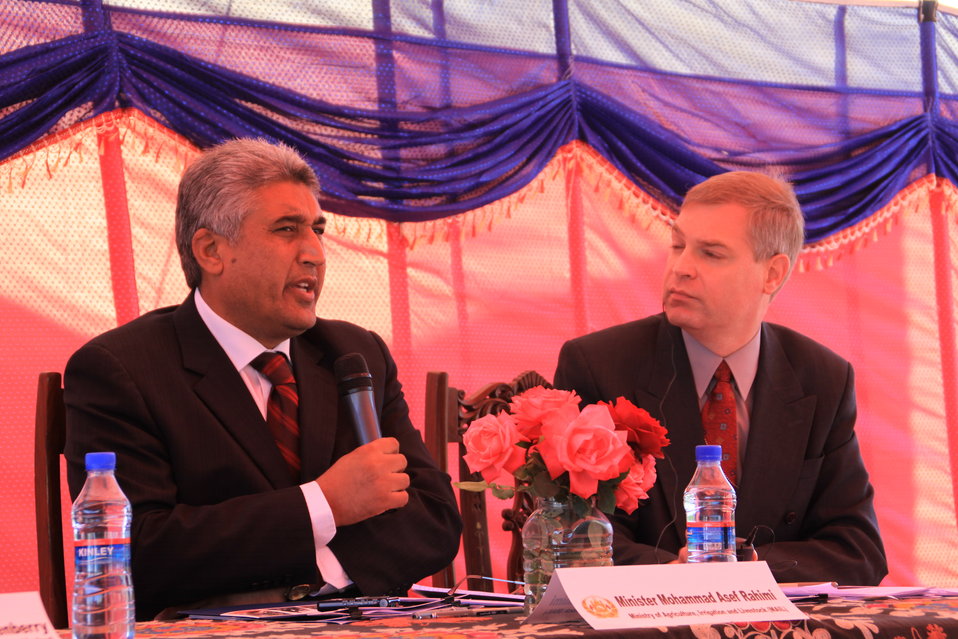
AVIPA Plus Wheat Seed Distribution 101005

US Ambassador Karl Eikenberry and USAID Acting Mission Director Kevin Brownawell joined the Minister of Agriculture, Irrigation and Livestock, H.E. Minister Mohammed Rahimi in signing a Memorandum of Understanding and distributing vouchers to area farmers for wheat and fertilizer.

US Ambassador Karl Eikenberry and USAID Acting Mission Director Kevin Brownawell joined the Minister of Agriculture, Irrigation and Livestock, H.E. Minister Mohammed Rahimi in signing a Memorandum of Understanding and distributing vouchers to area farmers for wheat and fertilizer.